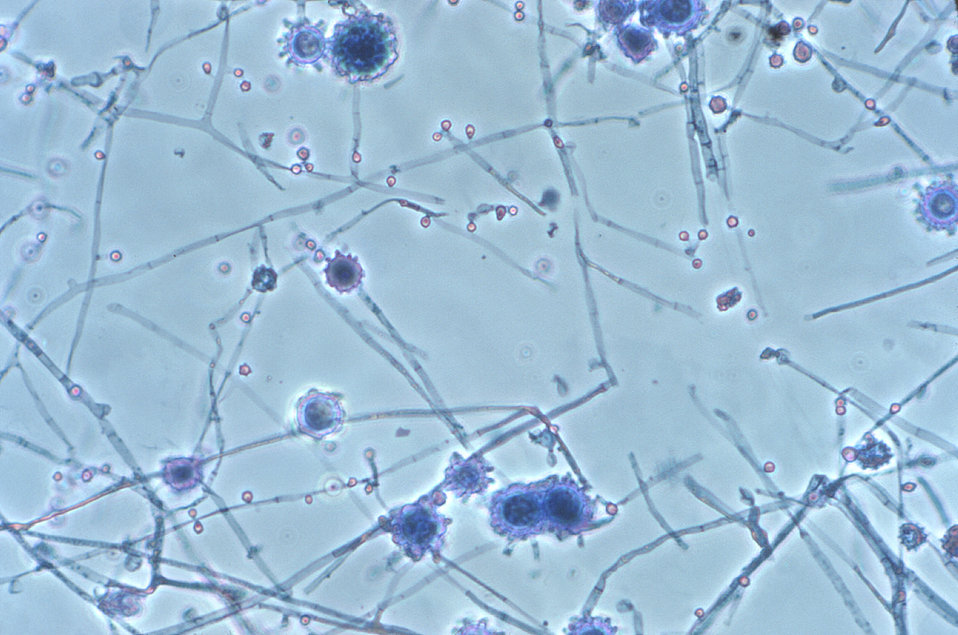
At a magnification of 400X, this photomicrograph revealed some of the ultrastructural morphology exhibited by Histoplasma capsulatum fungal macroconidia and macroconidia, which were isolated from Israeli soil samples.